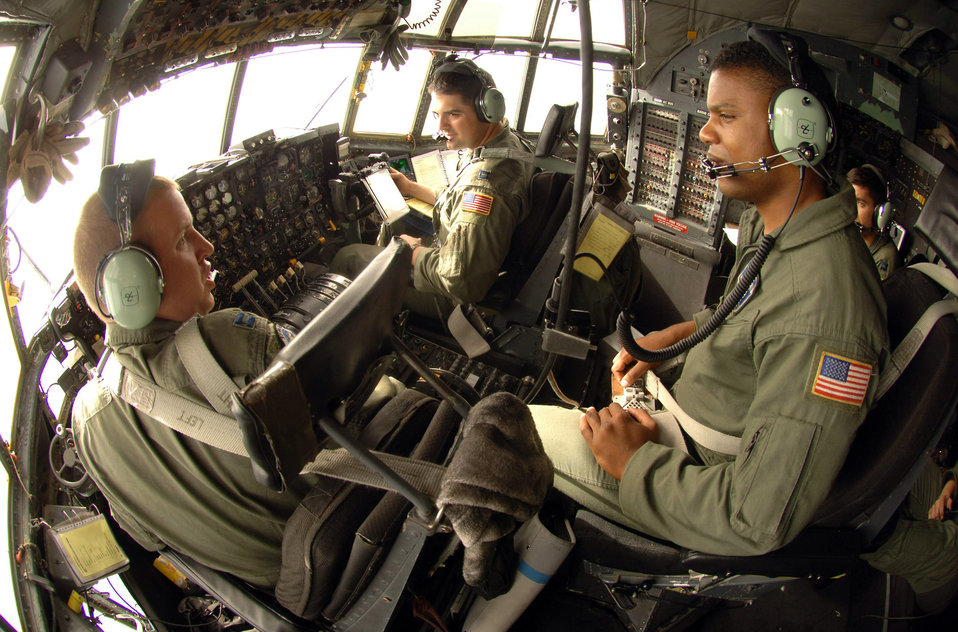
Airmen provide presidential support in Moscow

Capt. Zac Johnson, Capt. Jon Esses and Senior Airmen Glenn Scott talk as the fly a C-130 Hercules July 3 over the Baltic Sea. The three Airmen were returning from Moscow where they delivered a presidential support team and related equipment. The Airmen are assigned to the 37th Airlift Squadron at Ramstein, Air Base, Germany. Captain Johnson is a C-130 aircraft commander, Captain Esses is a co-pilot, and Airman Scott is a loadmaster.